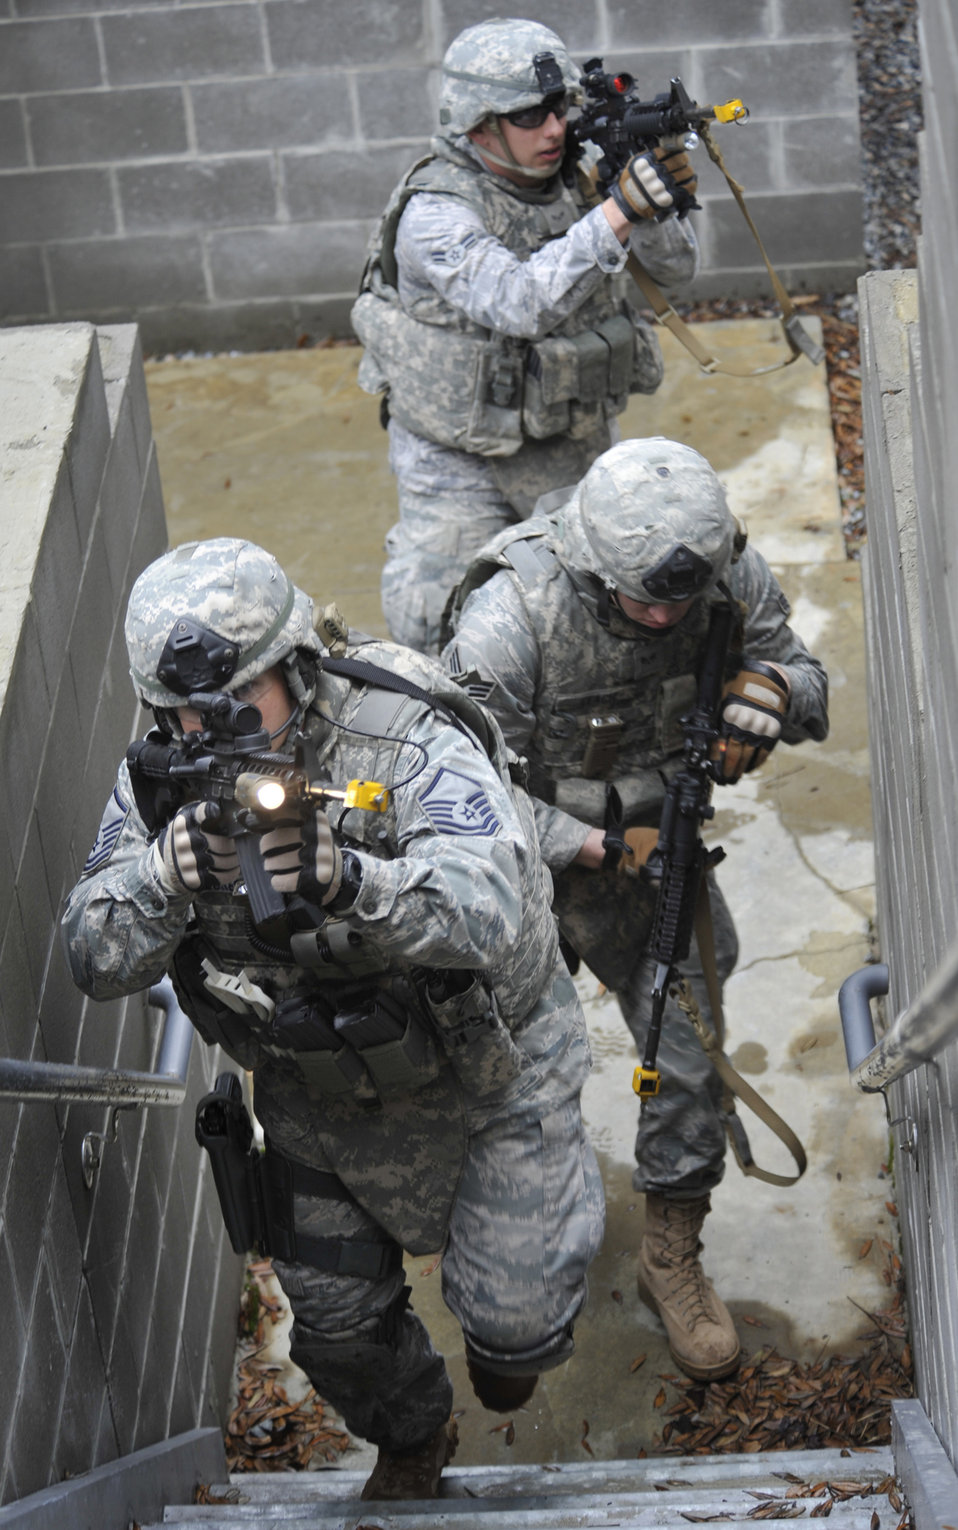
Follow the leader

Master Sgt. Kevin Jones (from front), Senior Airman James Leach and Airman 1st Class Nicholas Koch 'pursue' opposing forces Feb. 10, 2011, during an exercise at Moody Air Force Base, Ga. Sergeant Jones is the 822nd Base Defense Squadron flight sergeant. Airmen Leach and Koch are 822nd BDS fire team members.